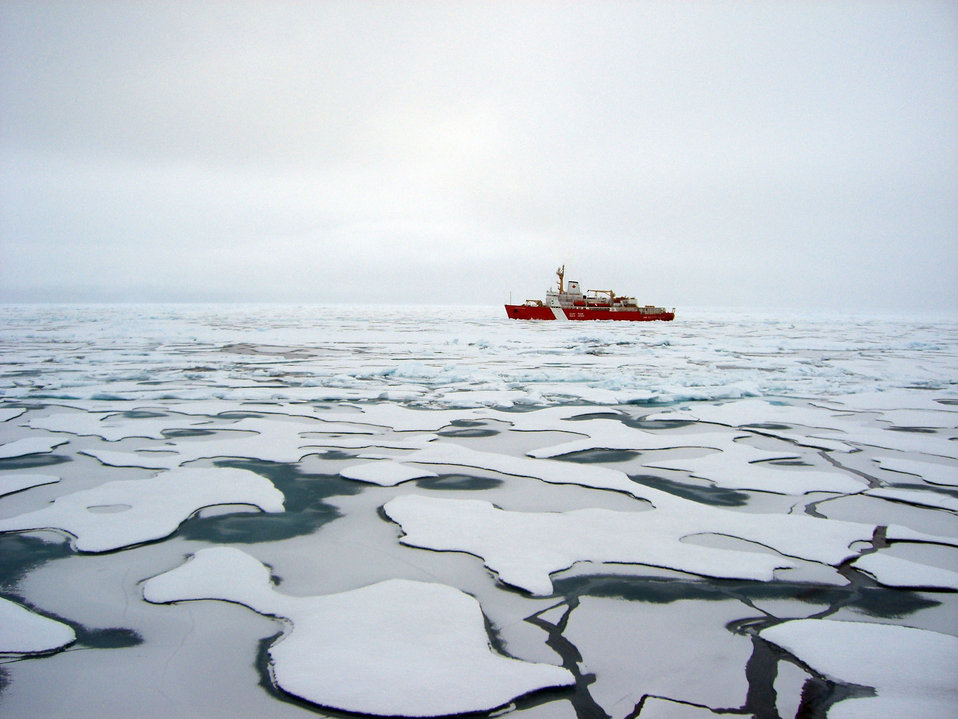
U.S.-Canada Fourth Joint Mission To Map the Continental Shelf in the Arctic Ocean

Views of the U.S.-Canada fourth joint mission to map the continental shelf in the Arctic Ocean in August and September 2011. The 2011 joint mission employed the flagship icebreaker from each country, the U.S. Coast Guard Cutter Healy and the Canadian Coast Guard Ship Louis S. St-Laurent (LSSL), with each ship performing different functions and one ship breaking ice for the other.